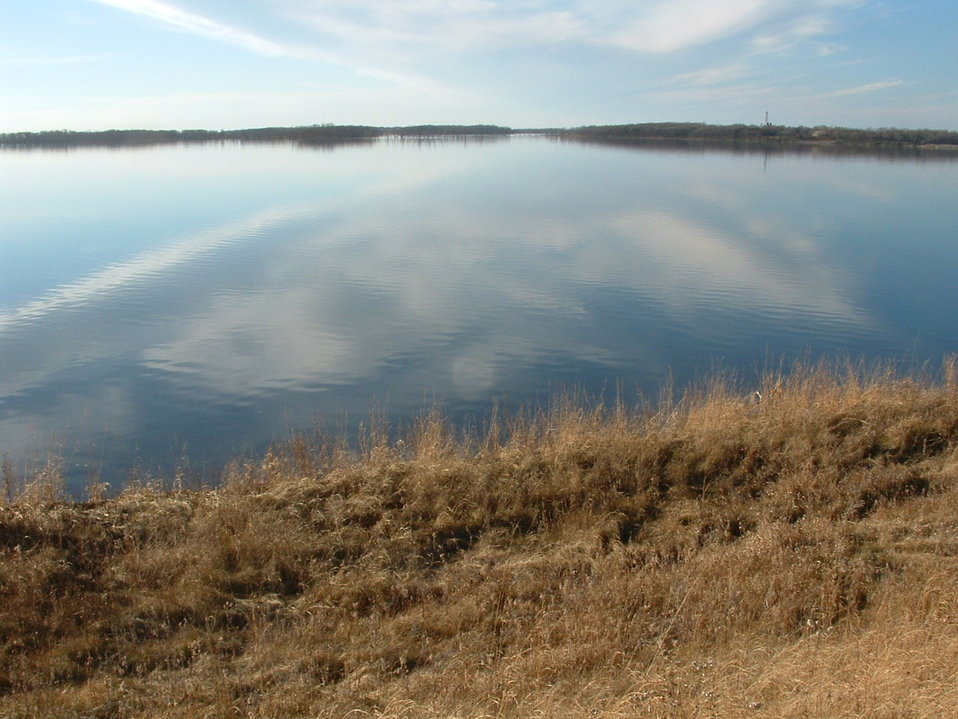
Clouds Reflecting on Waubay Lake

Wind is almost a constant in South Dakota. Once in a while a windless day shows the beauty of the clouds reflecting in the perfectly calm waters at Waubay NWR. View is from the east side of the Refuge looking northwest towards Headquarters.